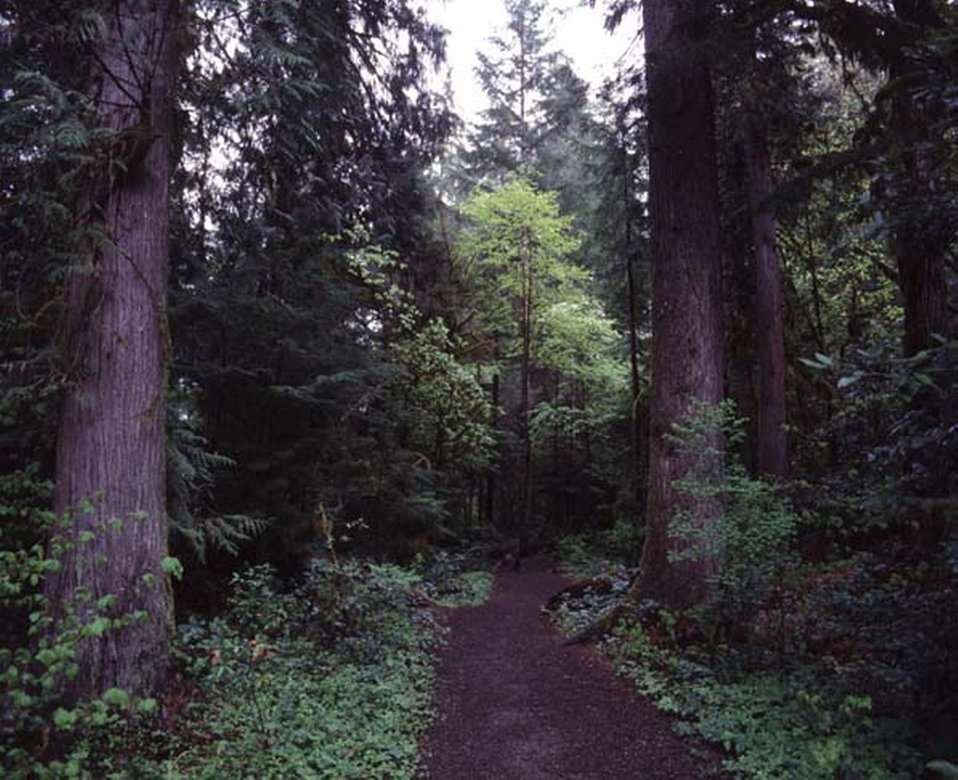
Scenic view of North Umpqua Recreational Trail in Swiftwater.